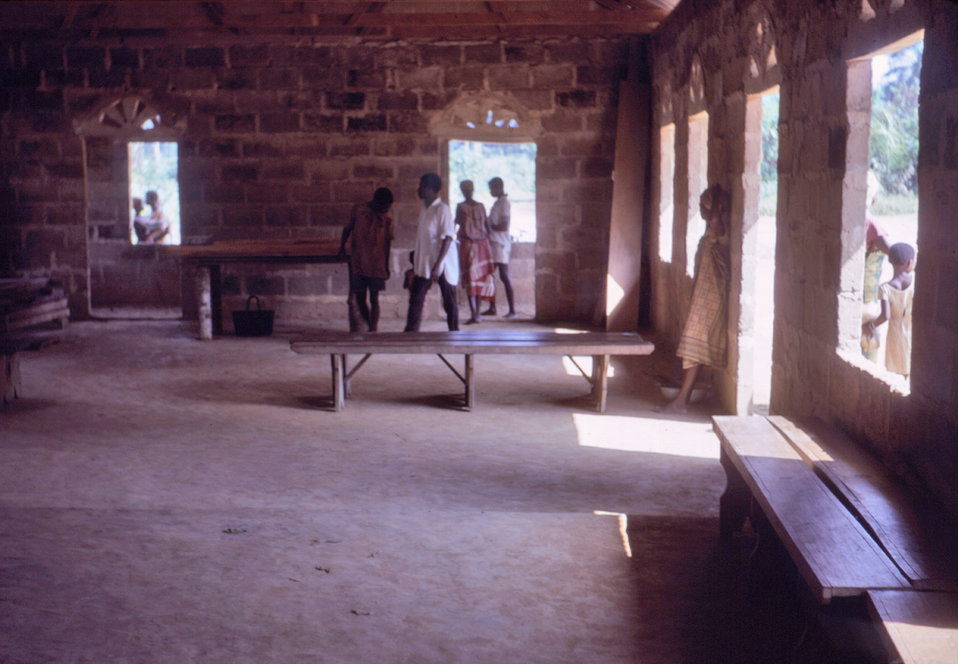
During the Nigerian-Biafran civil war, many Nigerian schools, like the one in this photograph, were used as clinics or food distribution points for refugees.